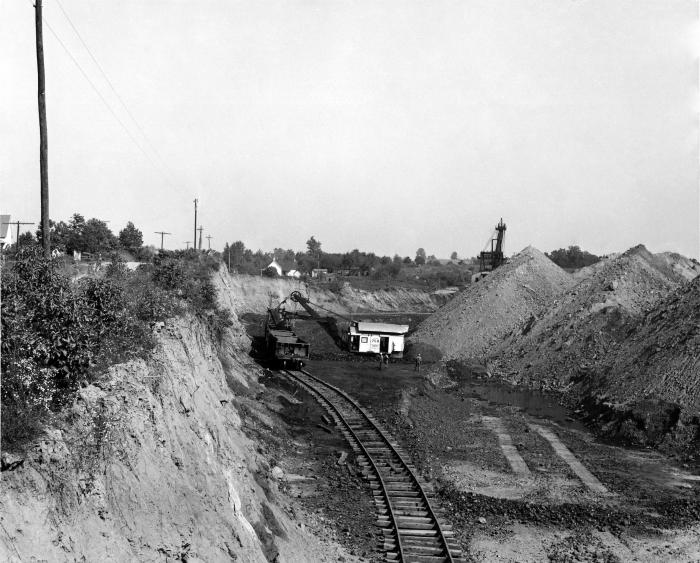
This was one of three images of a 1947, Indiana strip mining project underway, which depicted a bucket crane in the process of loading a waiting railcar with an unknown collection of raw materiel. This image was provided by the Center for Disease Control's (CDC), National Institute for Occupational Safety and Health (NIOSH). See PHIL 9553 and 9554 for two additional images of this scenario.